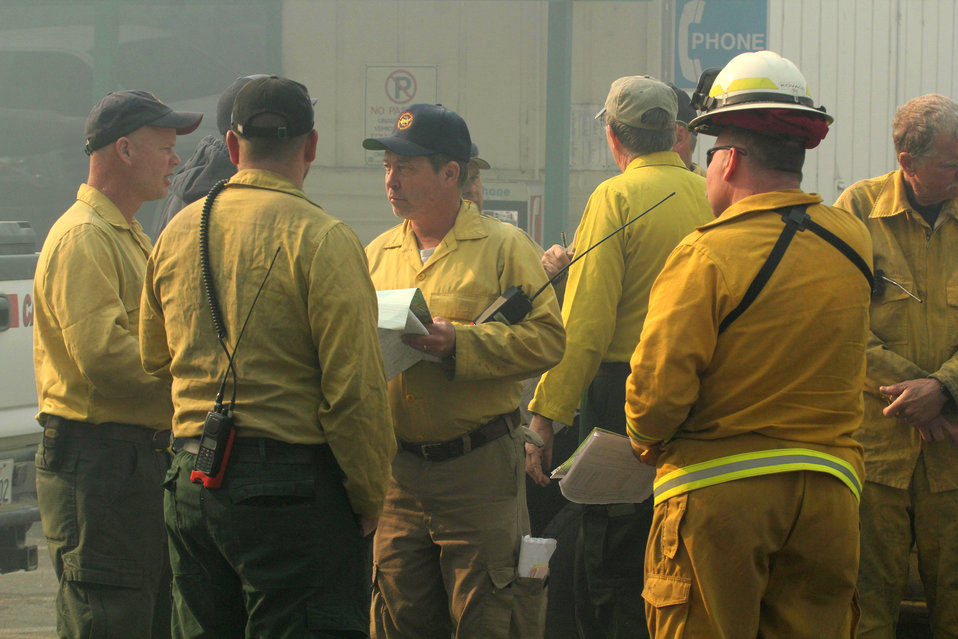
Fire commander holds fireline briefing with fire crews on the Rim Fire. The Rim Fire in the Stanislaus National Forest near in California began on Aug. 17, 2013 and is under investigation. The fire has consumed approximately 192,737 acres and is 30% contained.